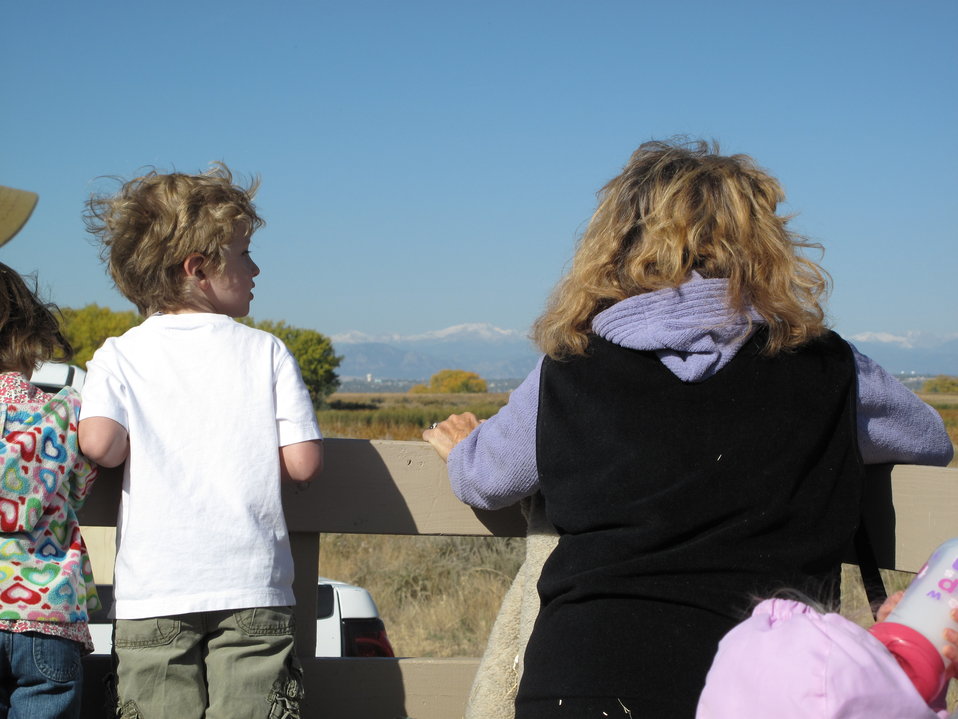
Refuge Round-Up 2010

Hayride at the Rocky Mountain Arsenal Refuge Round-Up event!